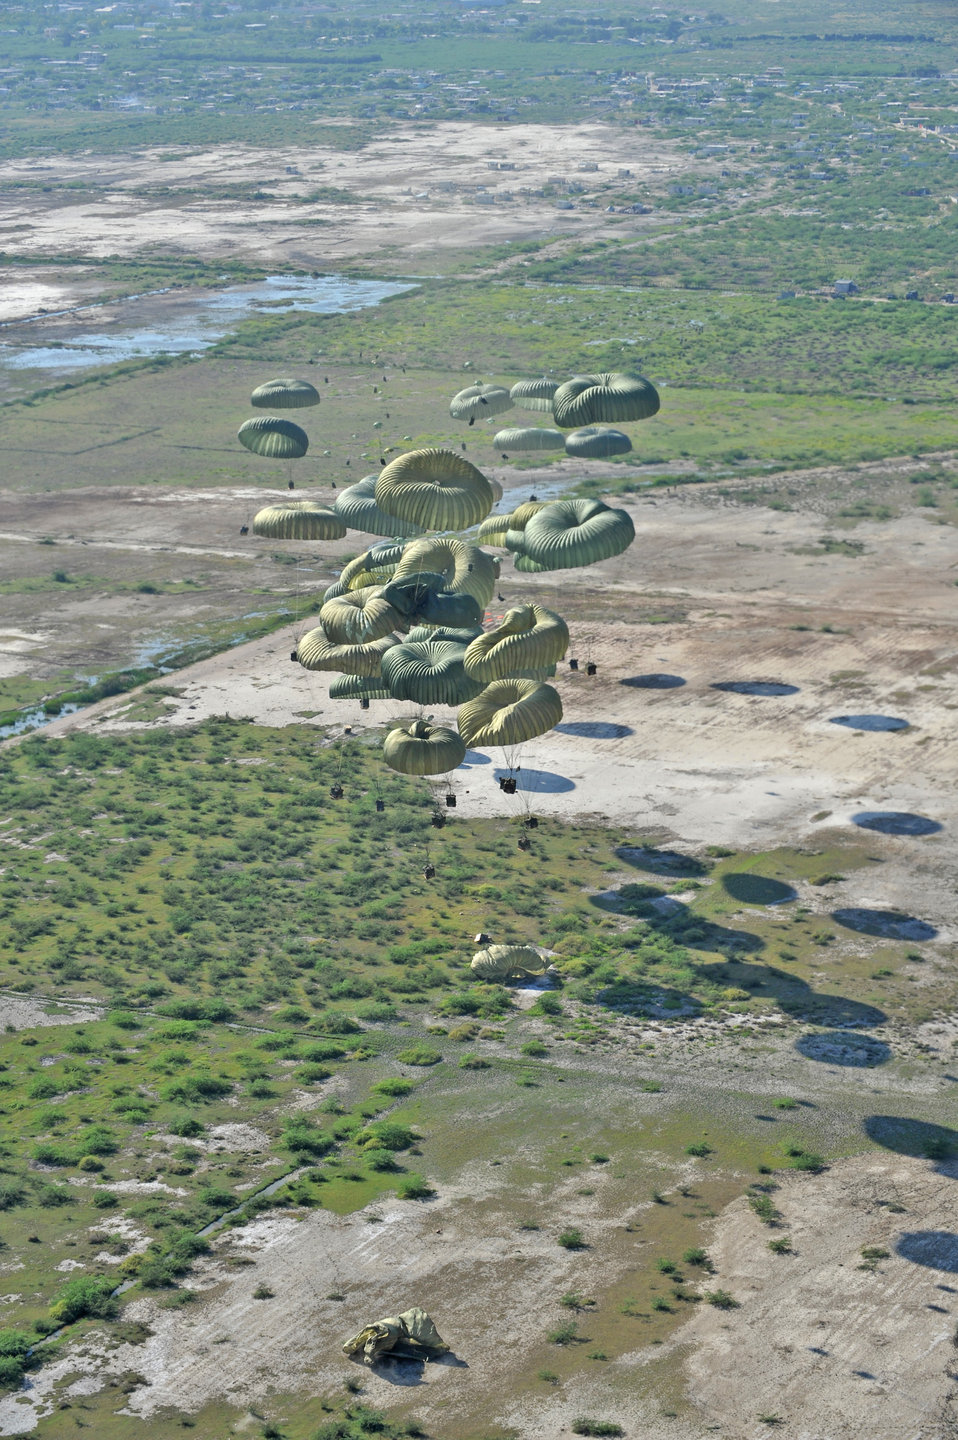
Operation Unified Response

Forty pallets of relief supplies exit a C-17 Globemaster III cargo aircraft over Haiti Jan. 18, 2010. The C-17, crewed by Airmen from the 437th Airlift Wing at Charleston Air Force Base, S.C., departed Pope AFB, N.C., and delivered 40 pallets of food and water into Haiti. Joint Task Force-Haiti secured the area where the supplies were delivered. Once on the ground, supplies were distributed by JTF-Haiti, the U.S. Agency for International Development and other relief personnel.